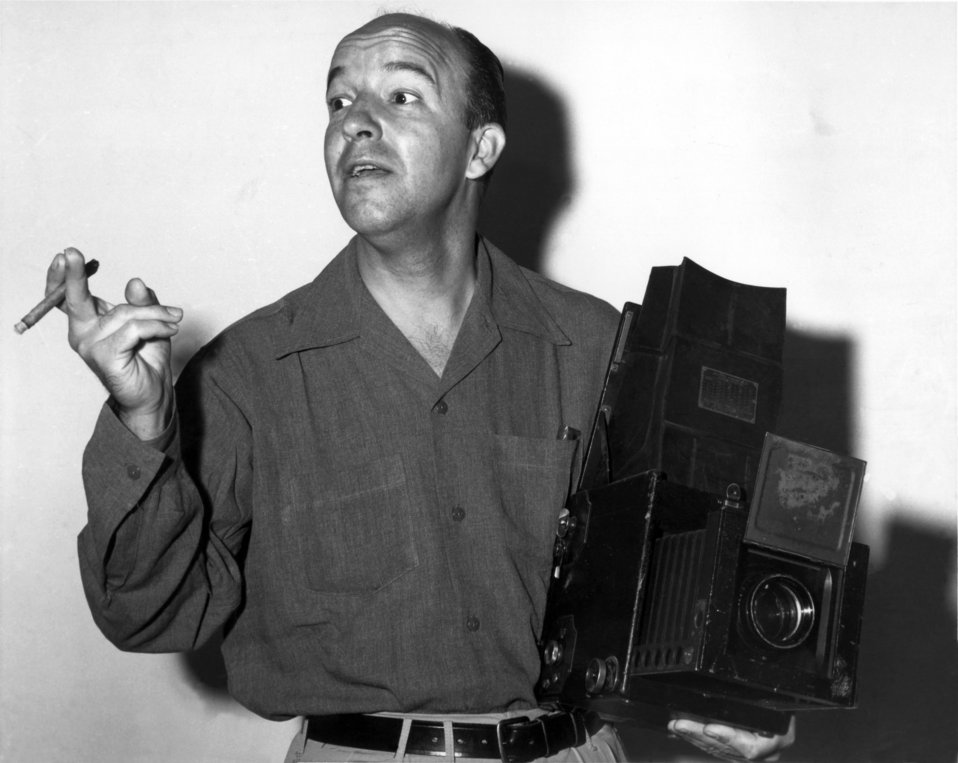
Fred Toy AP Photographer Oak Ridge

pro 955 DOE photo by Ed Westcott 8/20/45
Oak Ridge Tennessee